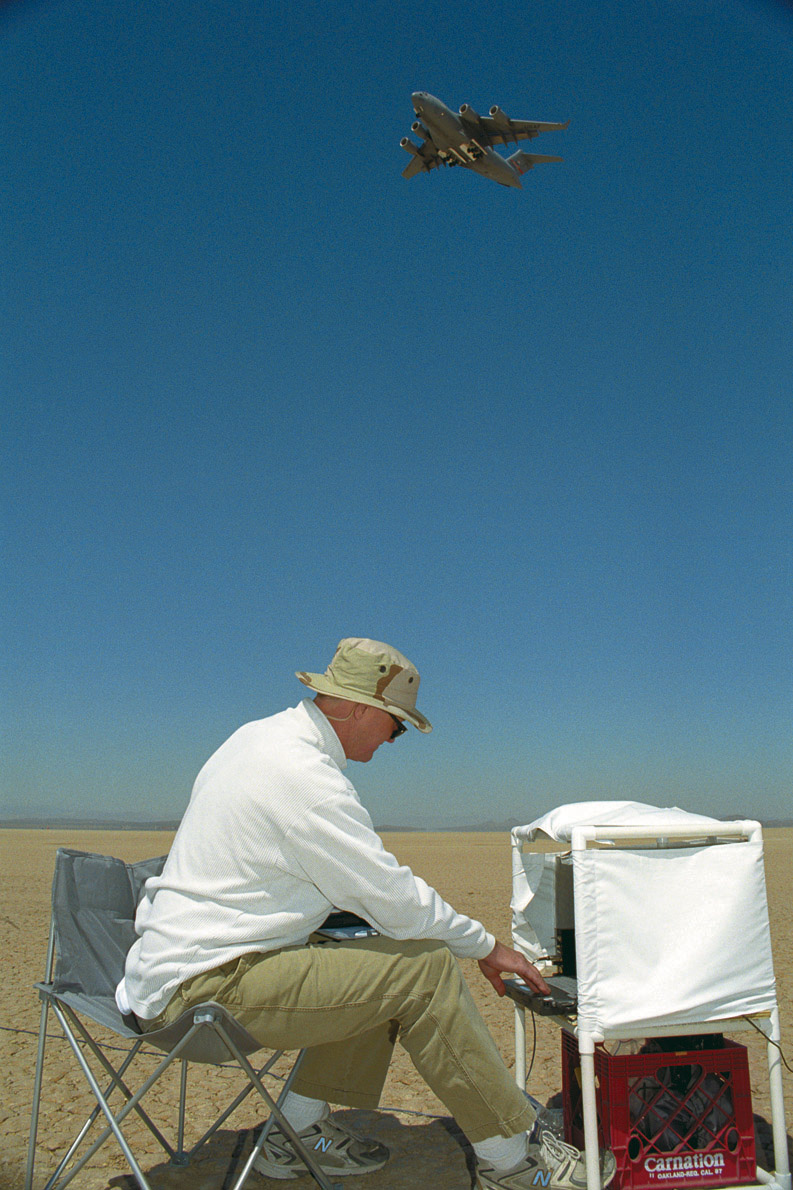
Noise testing

EDWARDS AIR FORCE BASE, Calif. -- Eric Kurth, an engineering student from California Polytechnic State University at San Luis Obispo, Calif., sits on Rogers Dry Lake Bed here Sept. 10 to record the noise footprint of the C-17 Globemaster III, flying above, as it attempted various landing approaches on Edwards. Mr. Kurth was participating in a noise mitigation study being conducted by NASA with an Edwards C-17.